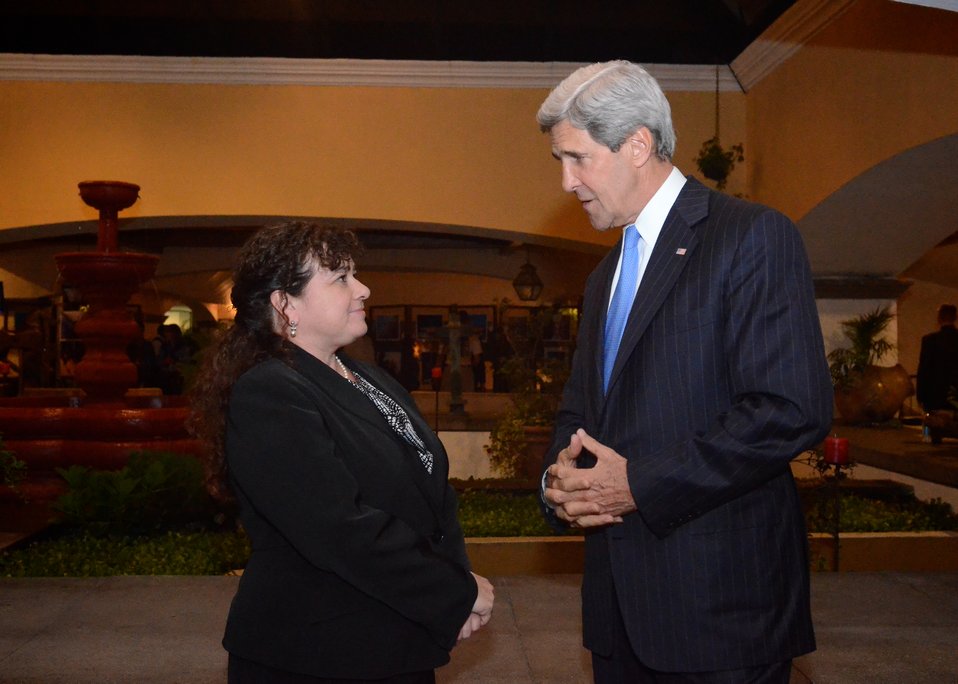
Secretary Kerry Speaks With Guatemalan Attorney General Paz y Paz

U.S. Secretary of State John Kerry speaks with Guatemalan Attorney General Paz y Paz during a break in Organization of American States meetings in Antigua, Guatemala, on June 4, 2013.